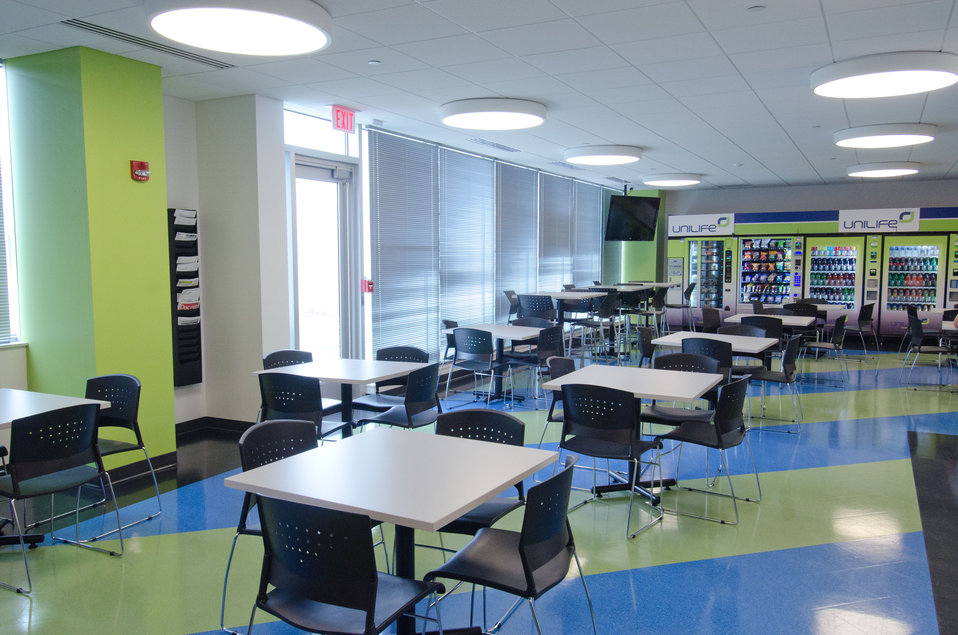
Break room with vending machines at Unilife, a medical device company focused on the design, development, manufacture and supply of a proprietary range of retractable syringes on Monday, April 20, 2011 in York, PA. In partnership with Sanofi-aventis, Mikron Group, and MDMA, U.S. Department of Agriculture Rural Development was able to guarantee $18,000,000 through its Business and Industry Guaranteed Loan Program to construct a custom-built, global headquarters and commercial production facility in York, Pennsylvania. The 165,000 sq. ft. facility was completed in late 2010 and can accommodate future growth as well as the Company’s projected demand from pharmaceutical and healthcare companies for its proprietary range of Unifill ready-to-fill (prefilled) and Unitract general purpose safety syringes. Stage one of the facility is designed to accommodate the production of up to 400 million Unilife syringes per year and to meet stringent pharmaceutical standards for primary drug containers. Adjacent to the manufacturing facility is Unilife’s global headquarters that support administrative, marketing, new product development, quality laboratories and other operational functions. Unilife, which first arrived in Pennsylvania in 2006. The company has doubled its employees for the past three years. There are approximately 150 employees, and they expect to double the number by 2015.